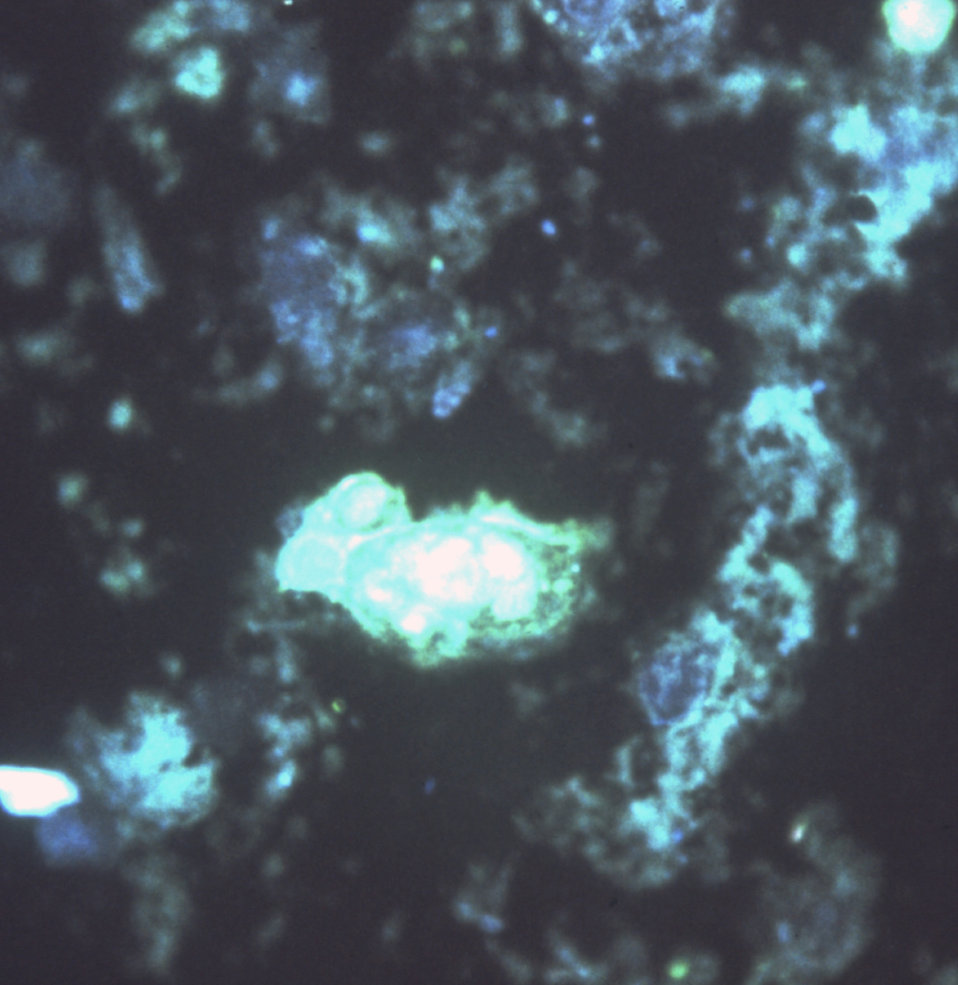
This photomicrograph shows the herpes simplex virus Type-II in a genital smear using immunofluorescent technique.